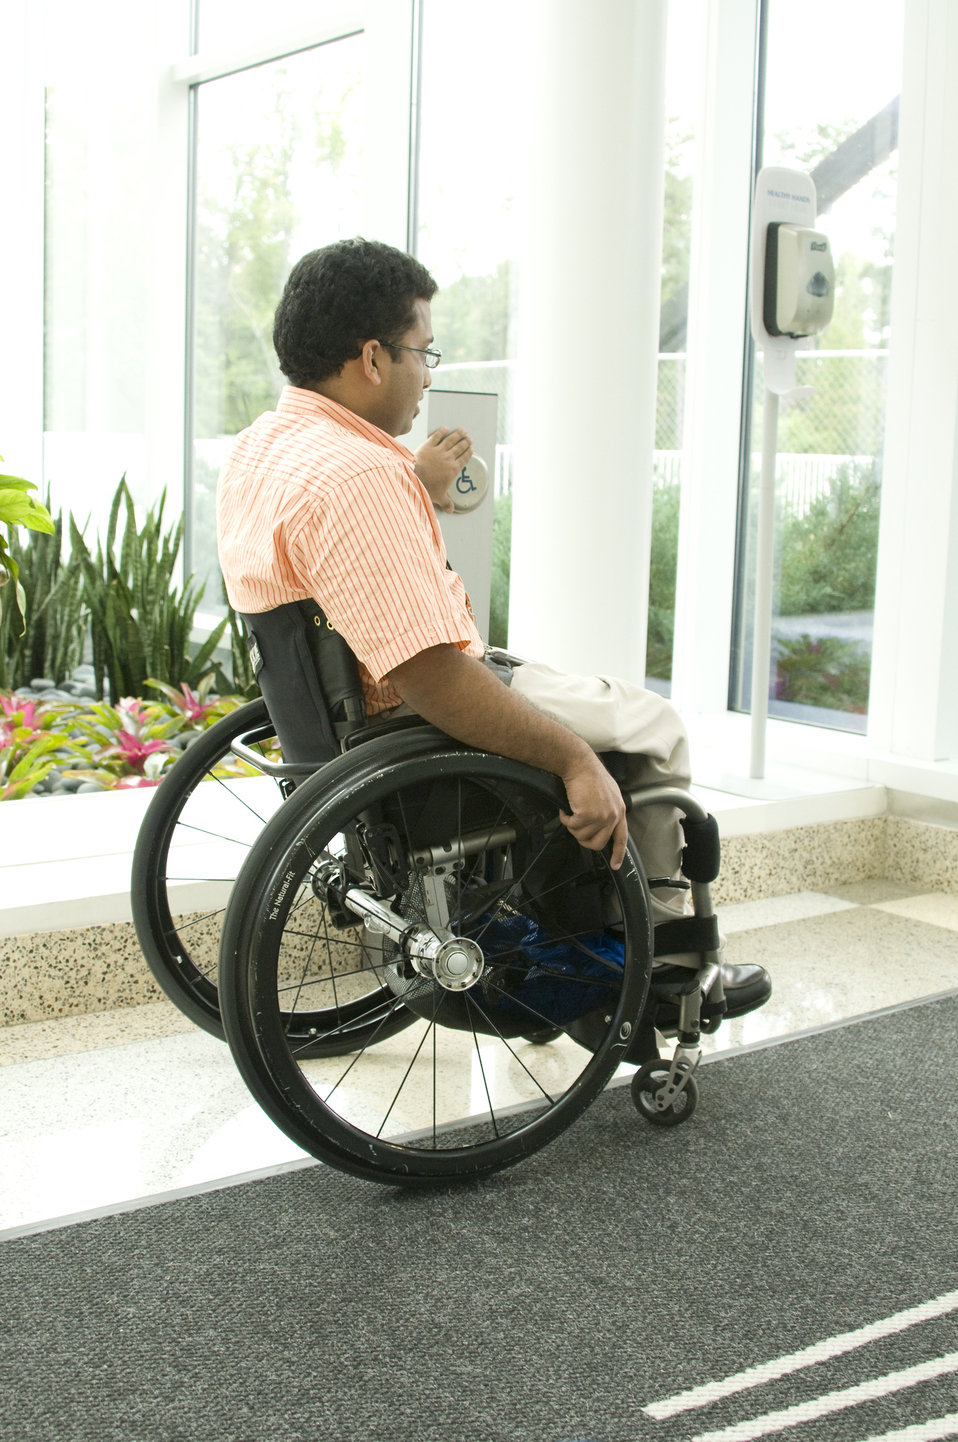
The man depicted here, was seated in his wheelchair, and was in the process of exiting one of the Centers for Disease Control's (CDC) Atlanta, Georgia facilities. Note that he was pressing the easily-accessible push pad, which would open the building's mechanized door, providing an unimpeded exit.